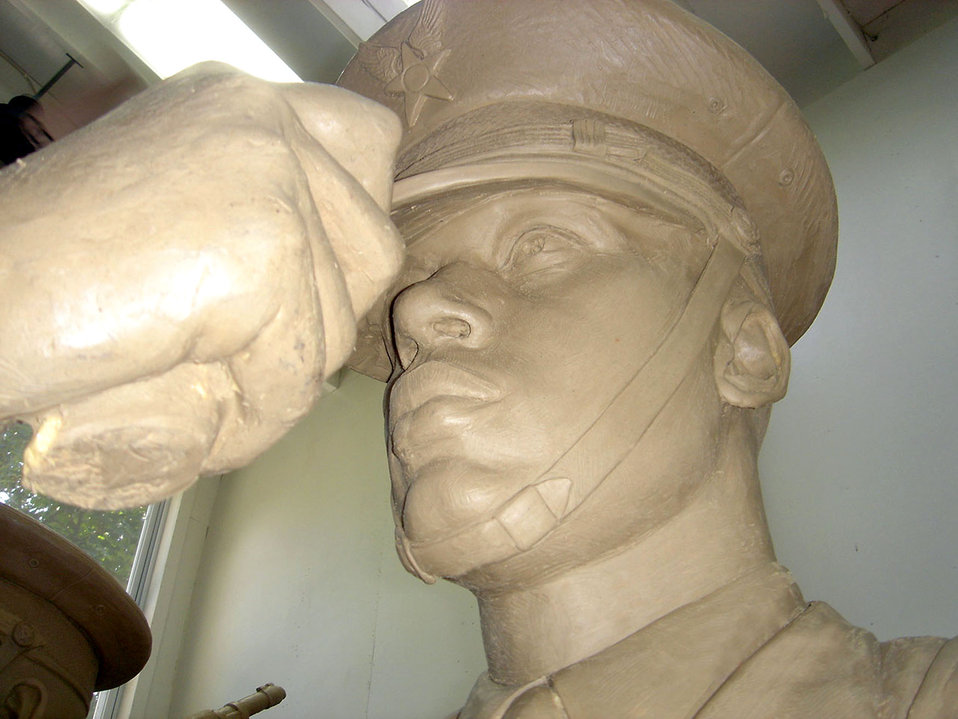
Airman a 'model' honor guard member

Senior Airman Michael Goodwin, United States Air Force Honor Guard, was used as a model for one of the bronze sculptures now residing at the Air Force Memorial.